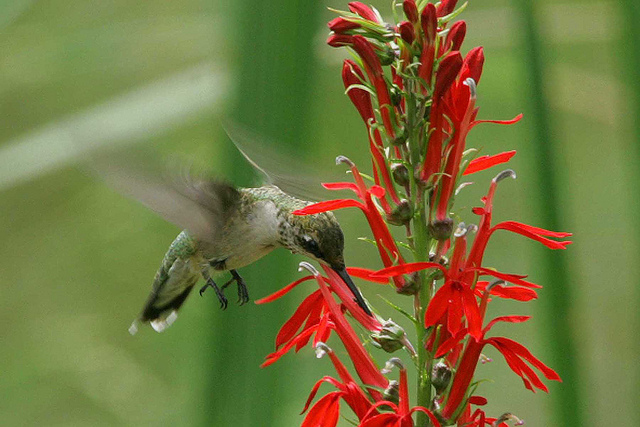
ruby-throated hummingbird on cardinal flower

John Heinz National Wildlife Refuge, PA